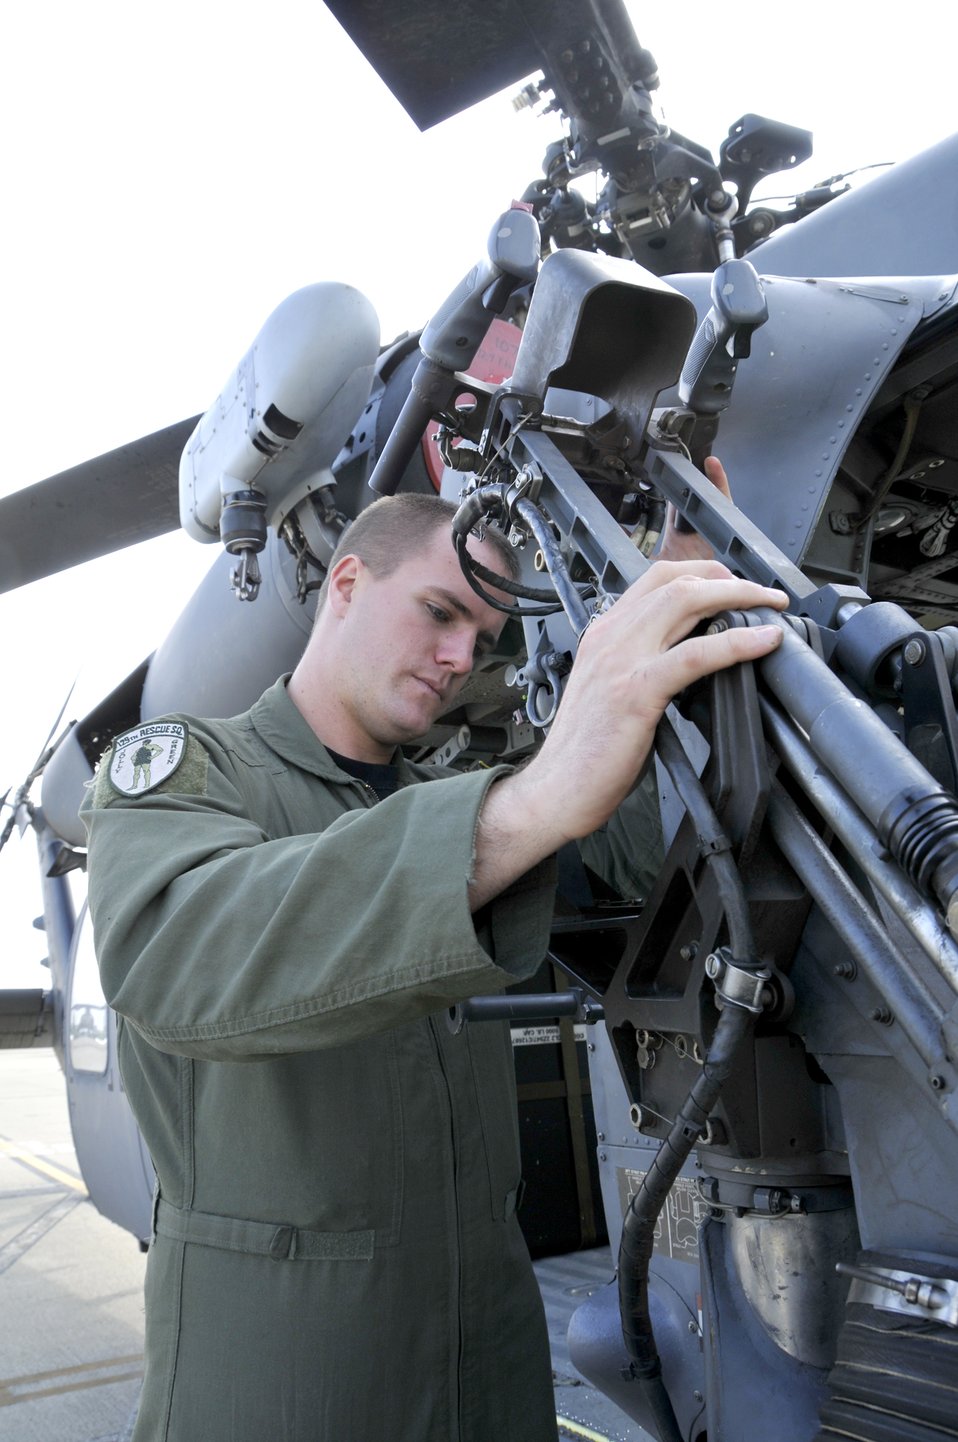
California Coast 'Guard'

Senior Airman Jacob Ellwood conducts a preflight check on a HH-60G Pave Hawk helicopter Nov. 6, 2010, at Moffett Federal Airfield, Calif. Airman Ellwood is a flight engineer with the California Air National Guard's 129th Rescue Squadron.